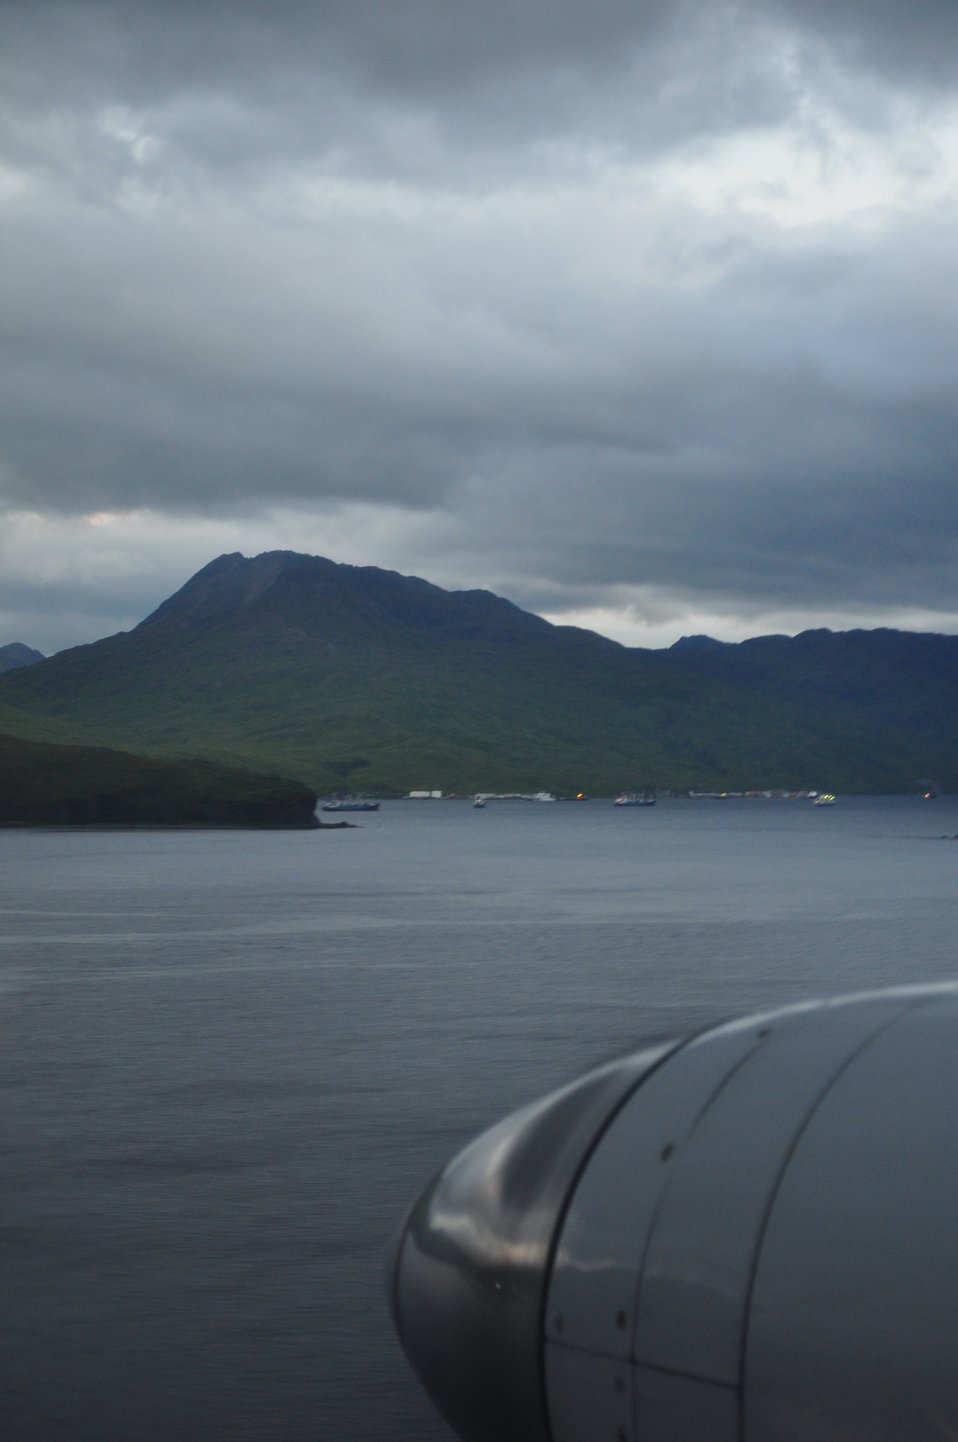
Final approach to Dutch Harbor. Yikes! Where's the airport!